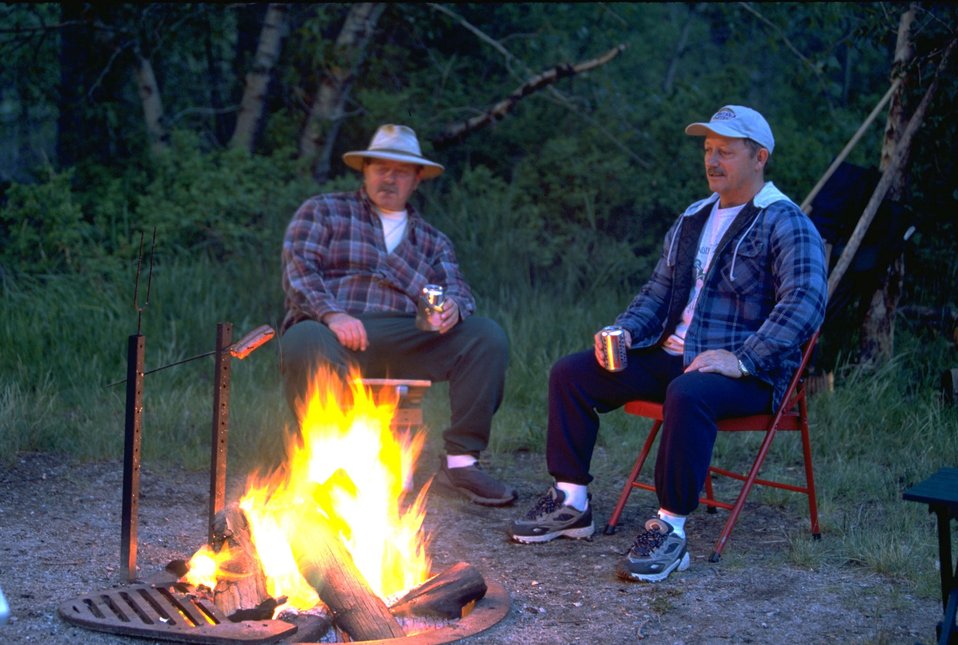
Campers enjoying an evening campfire